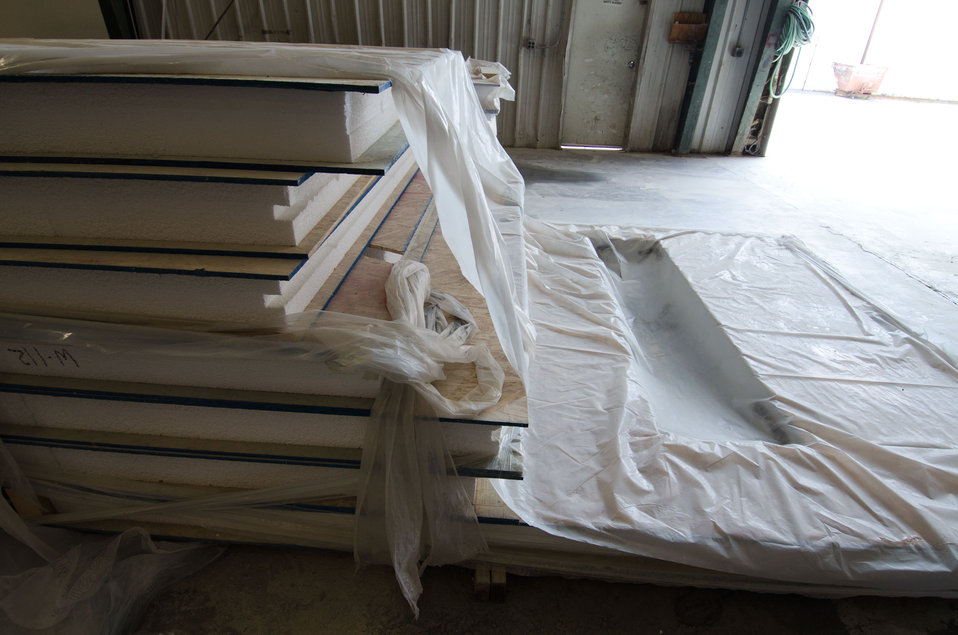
Extra thick foam filled floors and exterior walls add to the climate sealing and energy efficiency of a new type of manufactured home from Stardust Industries on Wednesday, July 13, 2011 in Monticello, KY. They are helping retool and redirect Kentucky’s houseboat manufacturing industry – which has been decimated because of the struggling economy – by using its facilities and manpower to create low-cost housing that is energy efficient. Rural Development obligated $499,000 in Rural Business Enterprise Grant funds to support this unique endeavor. Up until a few years ago, there were several successful houseboat manufacturers in the four-county area surrounding the city of Somerset. Most have now ceased operation or drastically reduced output, which has led to dramatic, long-term job loss. These new energy efficient homes will be constructed in redesigned, refitted houseboat factories using local workers that have been retrained.